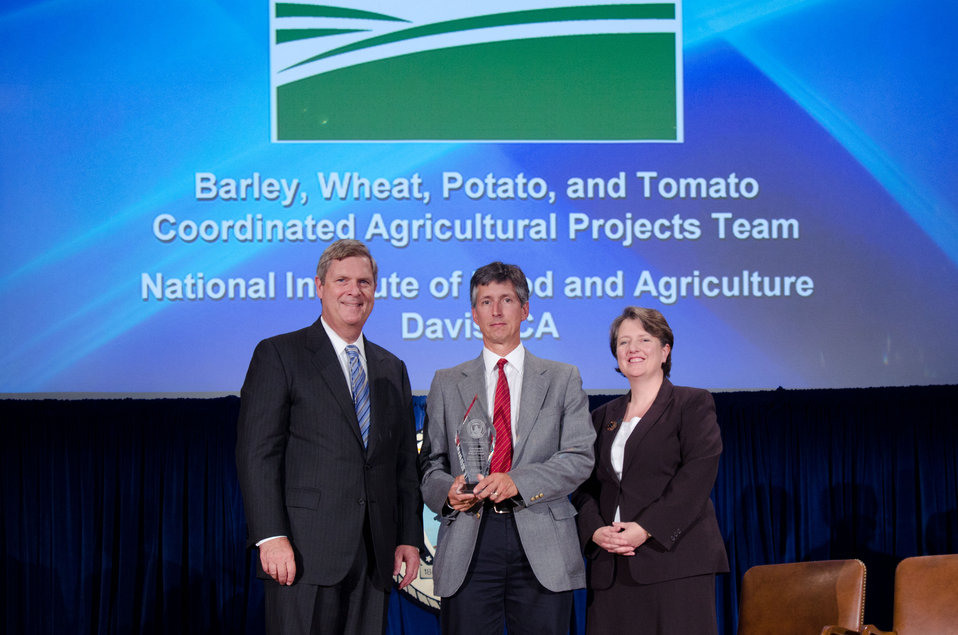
Agriculture Secretary Tom Vilsack (l) and Deputy Secretary Kathleen Merrigan (r), presents the Helping America Promote Sustainable Agricultural Production and Biotechnology Exports As America Works To Increase Food Security Award to Barley, Wheat, Potato, and Tomato Coordinated Agricultural Projects Team, National Institute of Food and Agriculture, Davis CA
Jorge Dubcovsky, Group Leader. In recognition to the barley, wheat, potato, and tomato Coordinated Agricultural Projects for their scientific c discoveries and
their translation into beneficial agricultural products.
On Wednesday, September 14, 2011 in the Jefferson Auditorium at the US Department of Agriculture in Washington, DC.